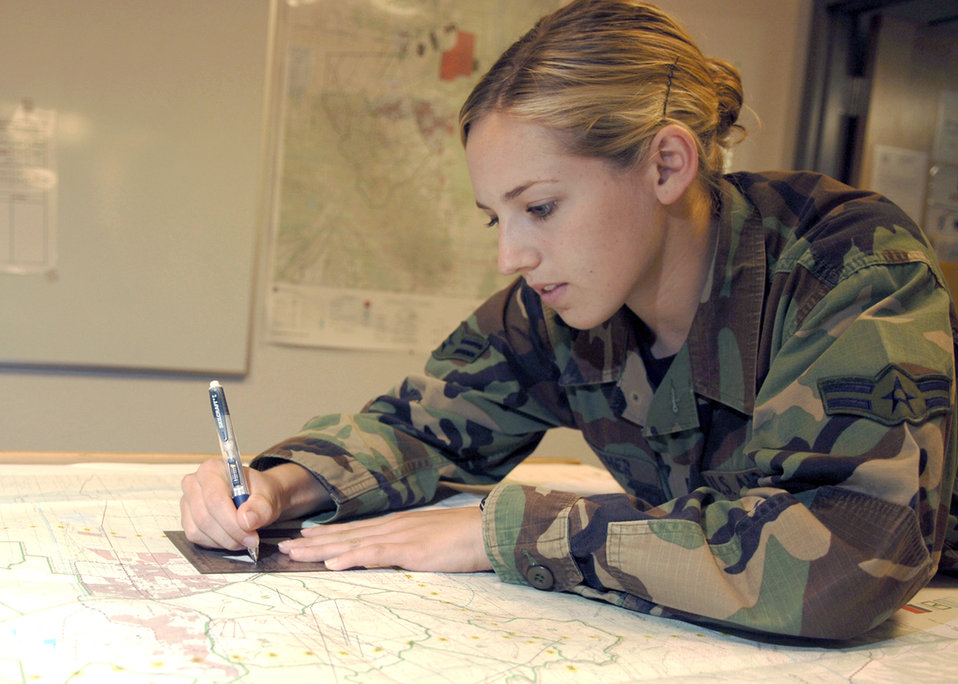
Plotting

Airman 1st Class Melissa Beecher uses a combat mission plotter to diagram exercise enemy threats on a map at Davis-Monthan Air Force Base, Ariz., on July 10. Airman Beecher is assigned to the 48th Rescue Squadron as an intelligence analyst.